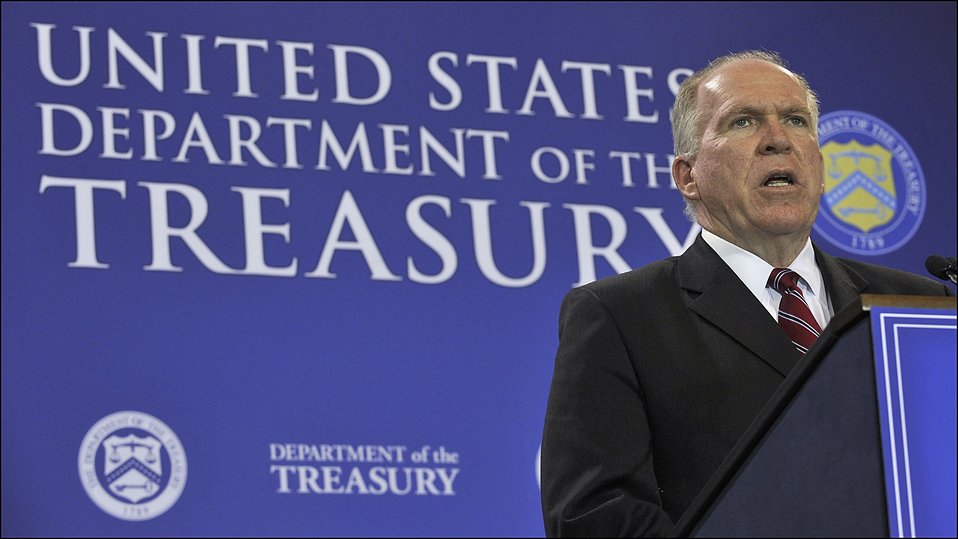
Ten Years Later: Progress and Challenges in Combating Terrorist Financing Since 9/11, 09/08/11

Assistant to the President for Homeland Security and Counterterrorism John O. Brennan provided the keynote address to close the symposium.